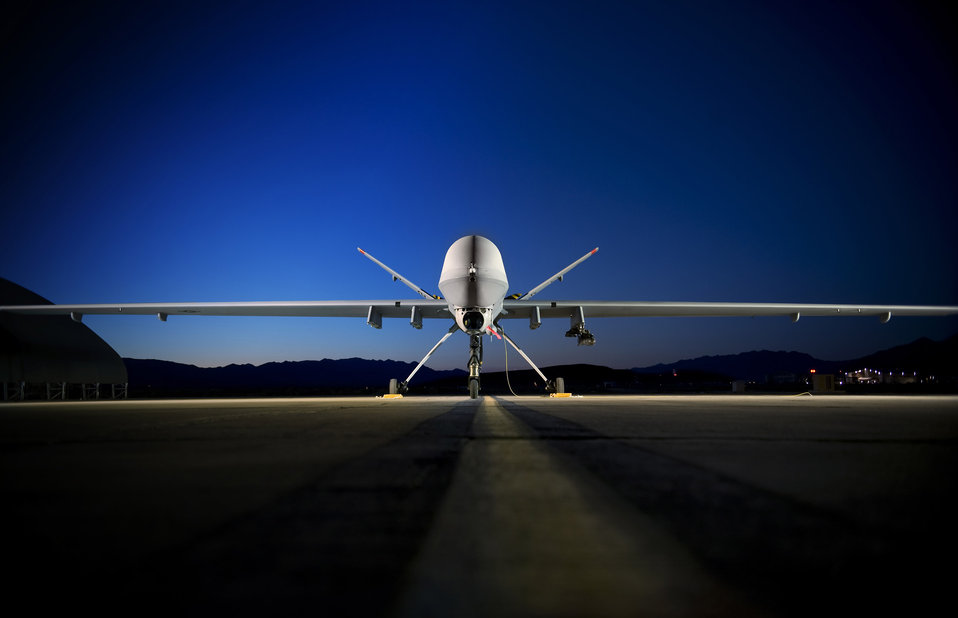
Air Force, Army leaders discuss new UAS concept of operations

An MQ-9 Reaper sits on the flightline at Creech Air Force Base, Nev. June 19. The Reaper is capable of carrying both precision-guided bombs and air-to-ground missiles. Gen. John D.W. Corley, Air Combat Command commander, met with Army Gen. William S. Wallace, Army Training and Doctrine Command commanding general, June 30 to discuss a new concept of operations that would maximize the contributions unmanned aerial systems bring to the joint warfighter.